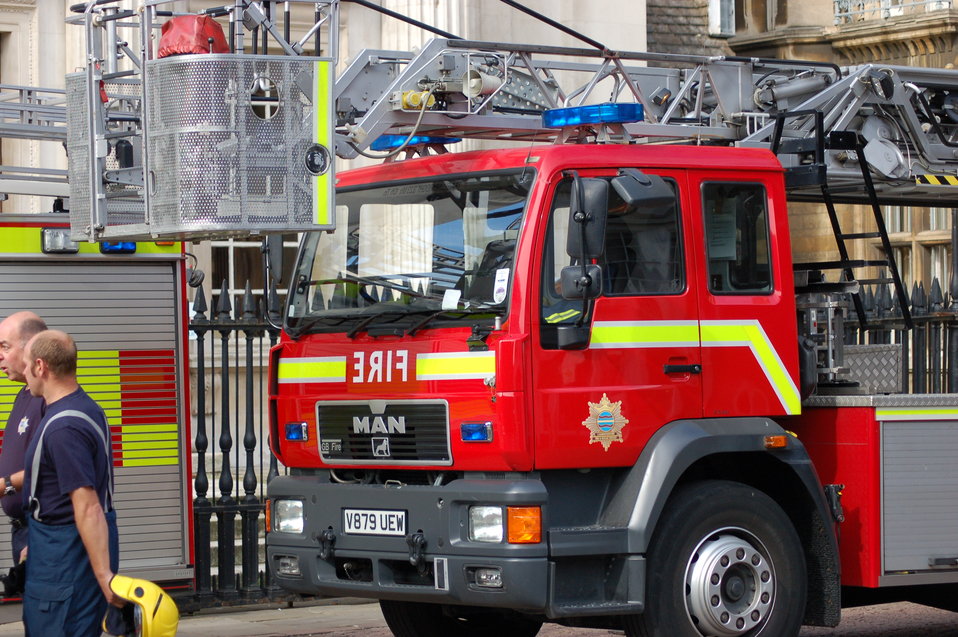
MAN fire engine of the Cambridgeshire Fire and Rescue Service. With 'FIRE' in mirror writing ('ERIF').